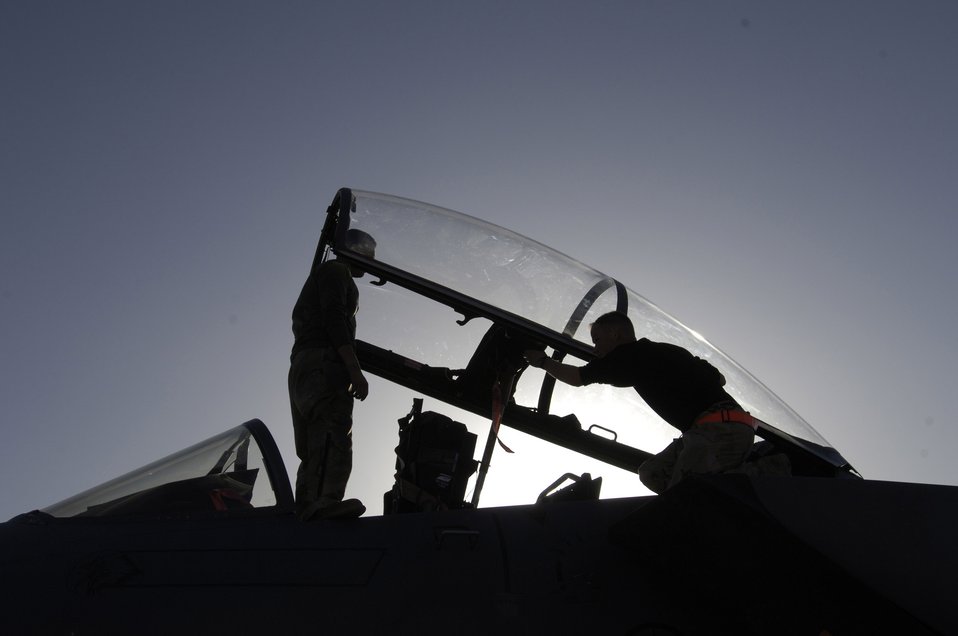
F-15 Strike Eagles take over close-air-support mission at Bagram

Airmen 1st Class David Muench and Bryen Sandoval perform a post-flight inspection on an F-15 Strike Eagle jet at Bagram Air Base, Afghanistan, in support of Operation Enduring Freedom.